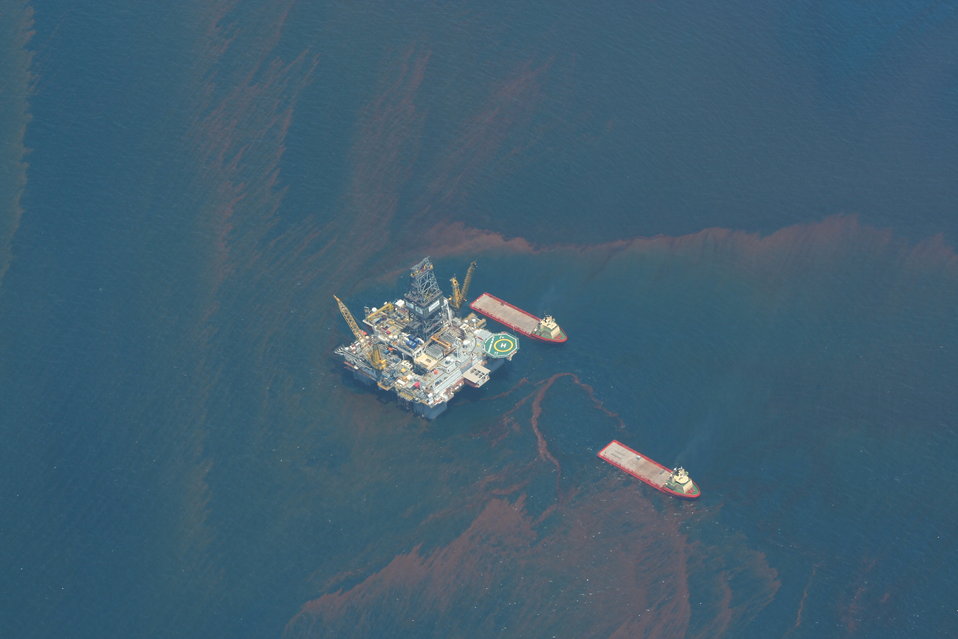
Flight 11 063